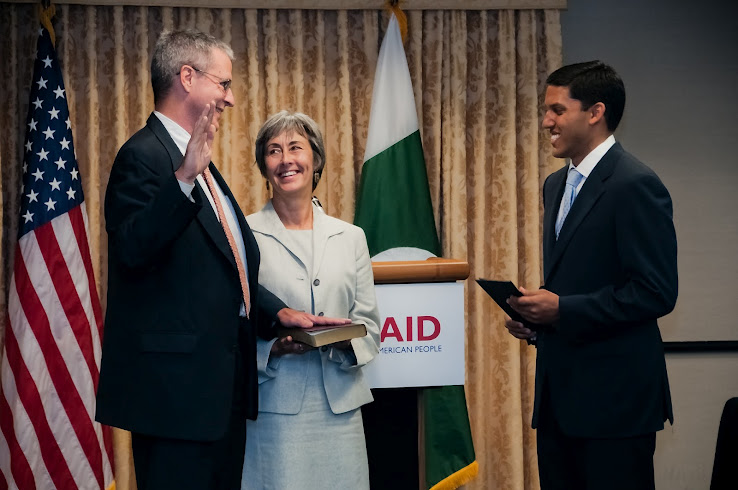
Jonathan Conly

WASHINGTON, D.C. – This week, Jonathan Conly was sworn in as the new U.S. Agency for International Development (USAID) Country Director for Pakistan. USAID Administrator Dr. Rajiv Shah presided over the ceremony and administered the oath in the presence of Mr. Conly’s family, friends, and colleagues, as well as members of the Pakistani-American community and the Pakistan Embassy’s Deputy Chief of Mission, Dr. Asad Majeed Khan.